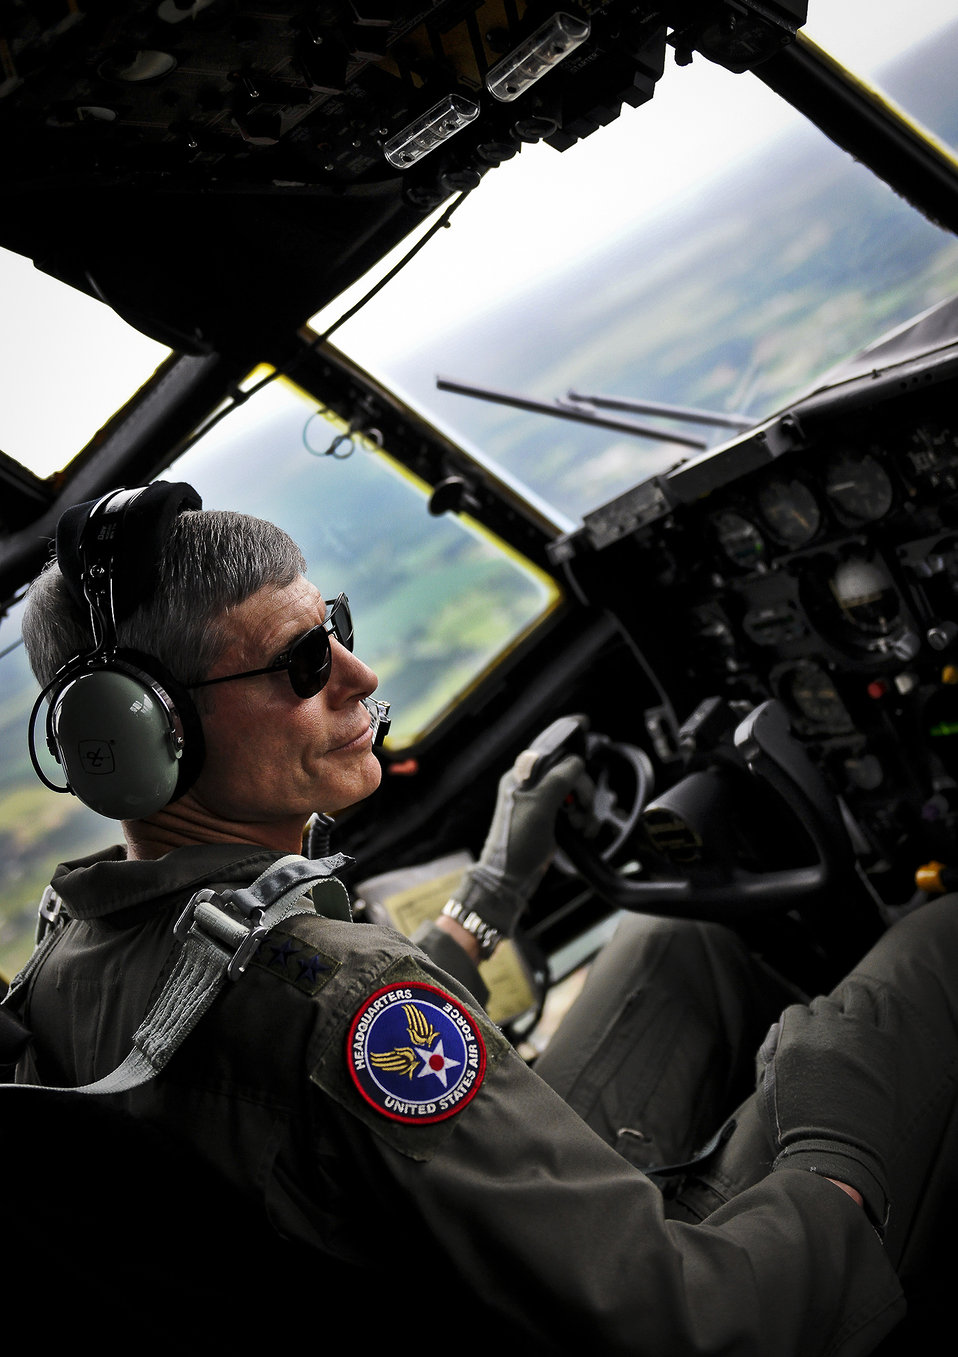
CSAF in the seat

Air Force Chief of Staff Gen. Norton Schwartz flies an MC-130E Combat Talon I during his last flight as an active duty officer near Hurlburt Field, Fla., July 12, 2012. The MC-130E Combat Talon I crew conducted a local training sortie during the mission. It also served as Schwartz’s “fini flight” in the Air Force.